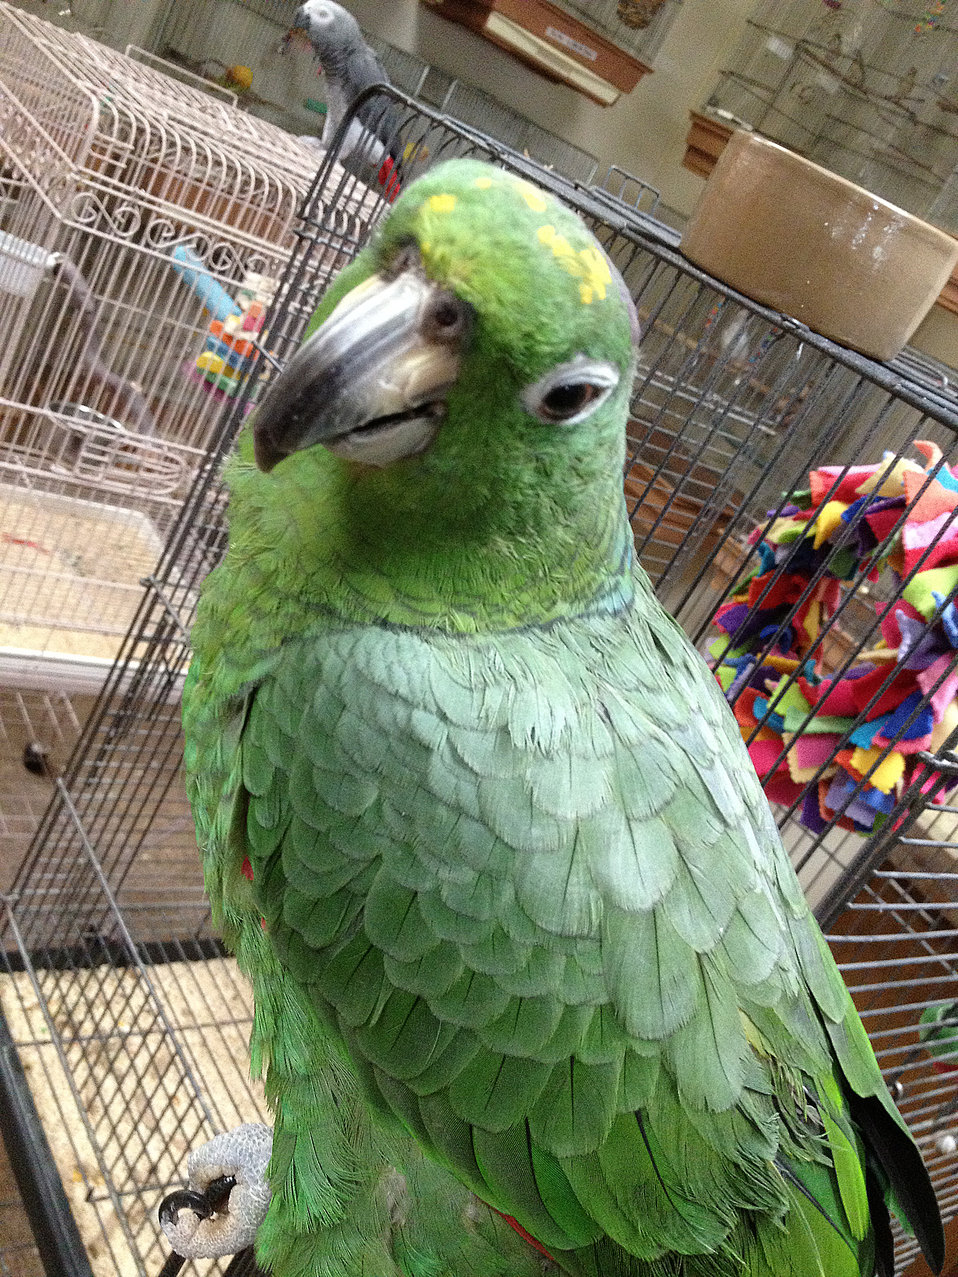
This image depicts a juvenile Double Yellow-Headed Amazon parrot, Amazona oratrix, perched atop his cage in a pet store. This bird is an endangered specie native to Mexico and northern Central America. In the background, you can also see a perched African Grey parrot, Psittacus erithacus, a closer view of which may be seen in PHIL 15007.